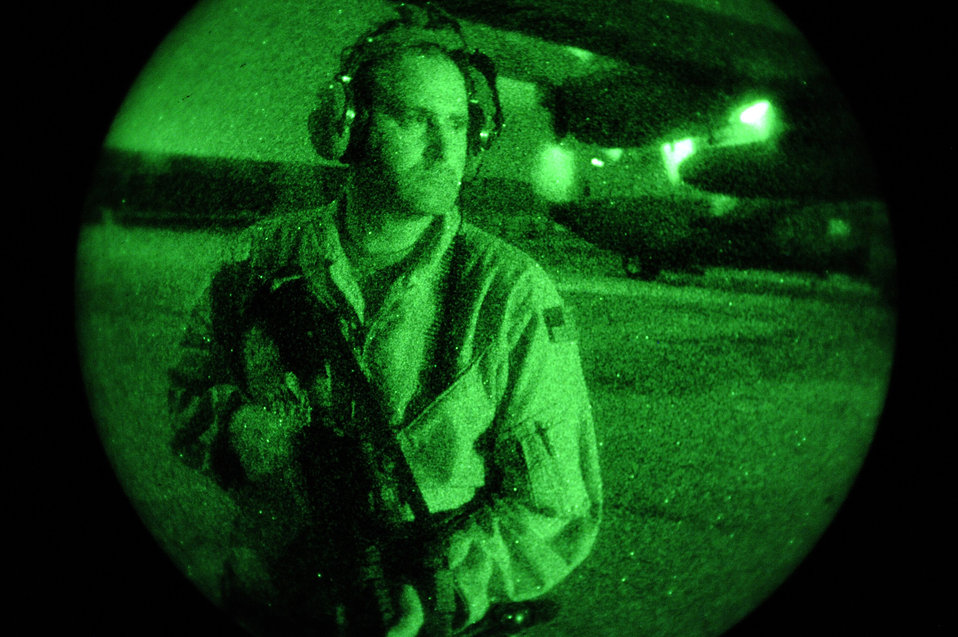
A watchful presence

Staff Sgt. Mike Klinkert, a Fly Away Security Team, or FAST, member, secures the perimeter around a C-130 Hercules aircraft Aug. 13 at Jalalabad Airfield, Afghanistan. Sergeant Klinkert's FAST team is a select group of security forces Airmen from Bagram Airfield who are responsible for the security of an aircraft, its crew and cargo at unsecured airfields.